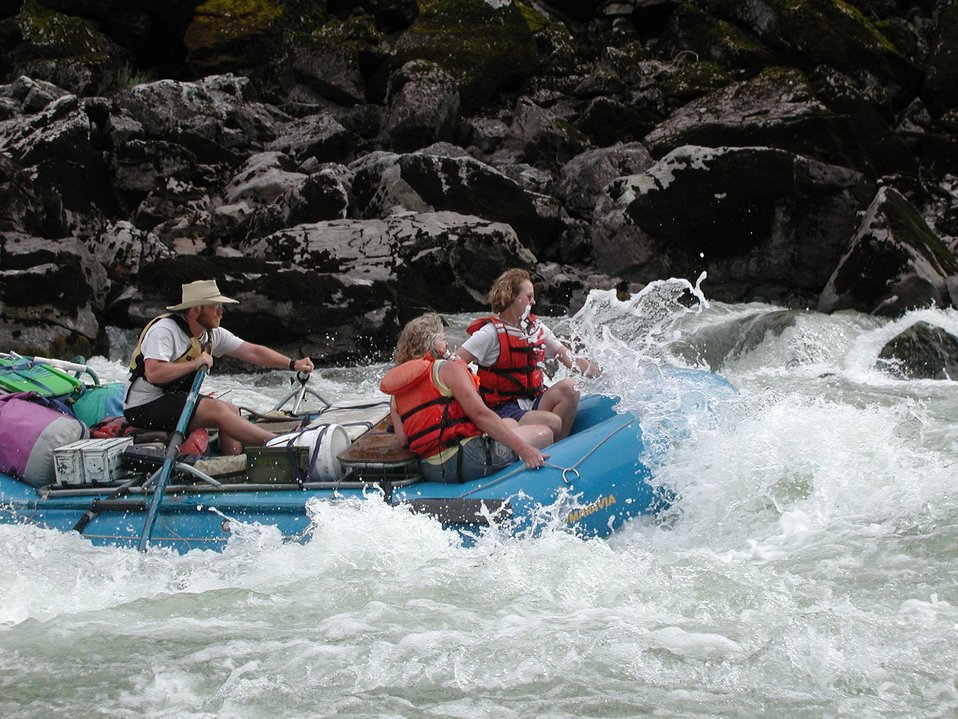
Recreation Rafting on Lower Salmon River Cottonwood Field Office UCSC Upper Columbia Salmon Clearwater District